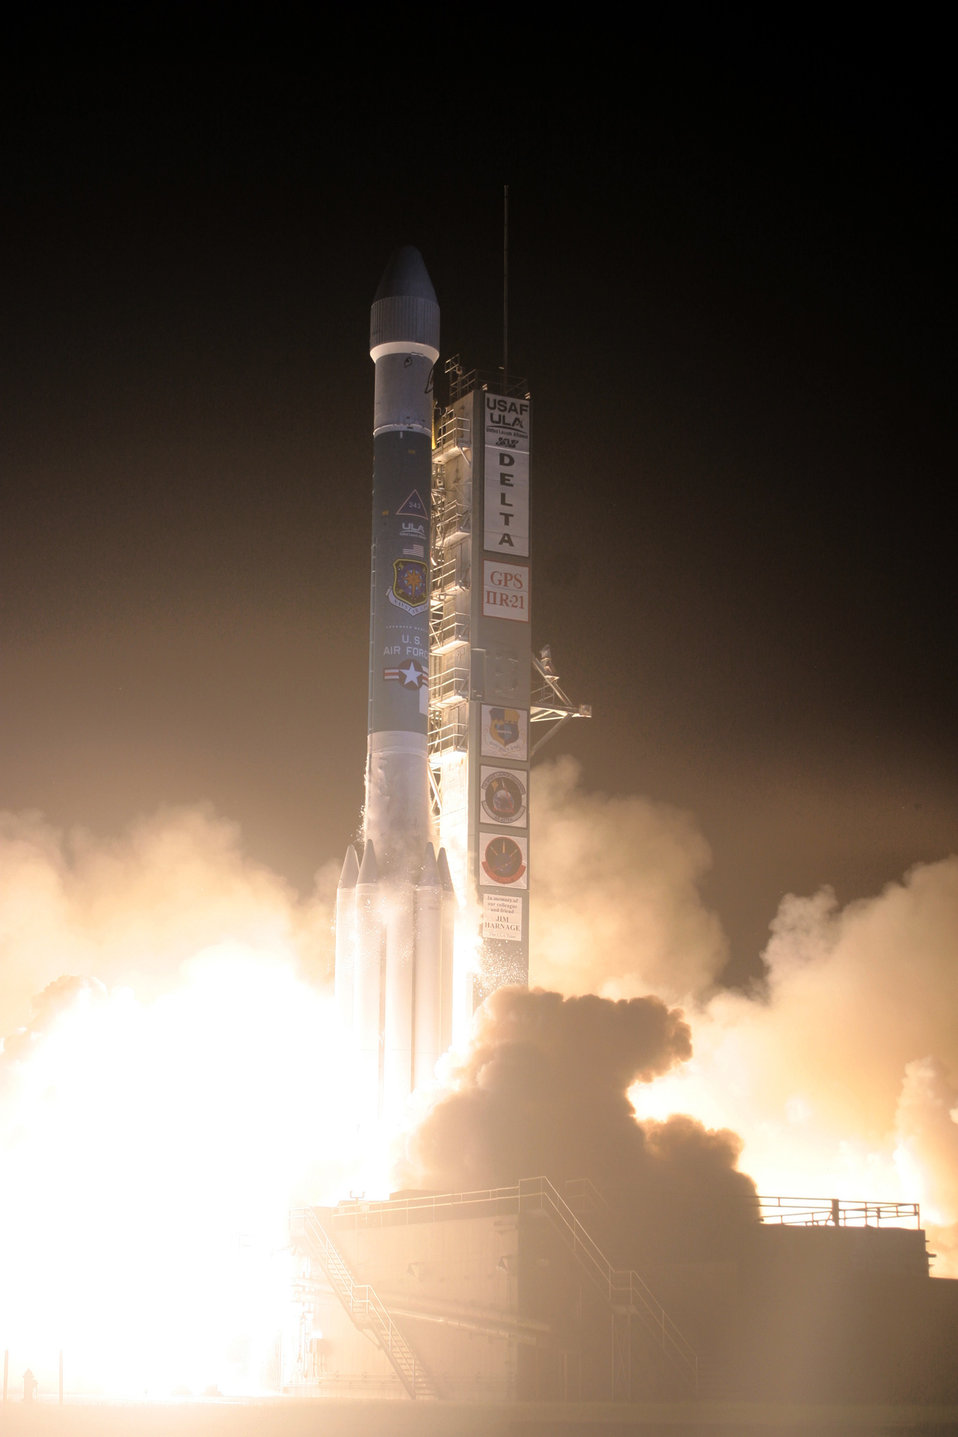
USAF Launches GPS satellite, final USAF Delta II

A United Launch Alliance Delta II rocket blasts off with the Air Force's Global Positioning System IIR-21 satellite from Space Launch Complex-17A Aug. 17 at 6:35 a.m. (Eastern Daylight Time). This was the 48th successful and last in a series of GPS launches on a Delta II rocket ending an era that began in February 1989. During that time, the Delta II/GPS tandem boasted a 98 percent mission success rate.